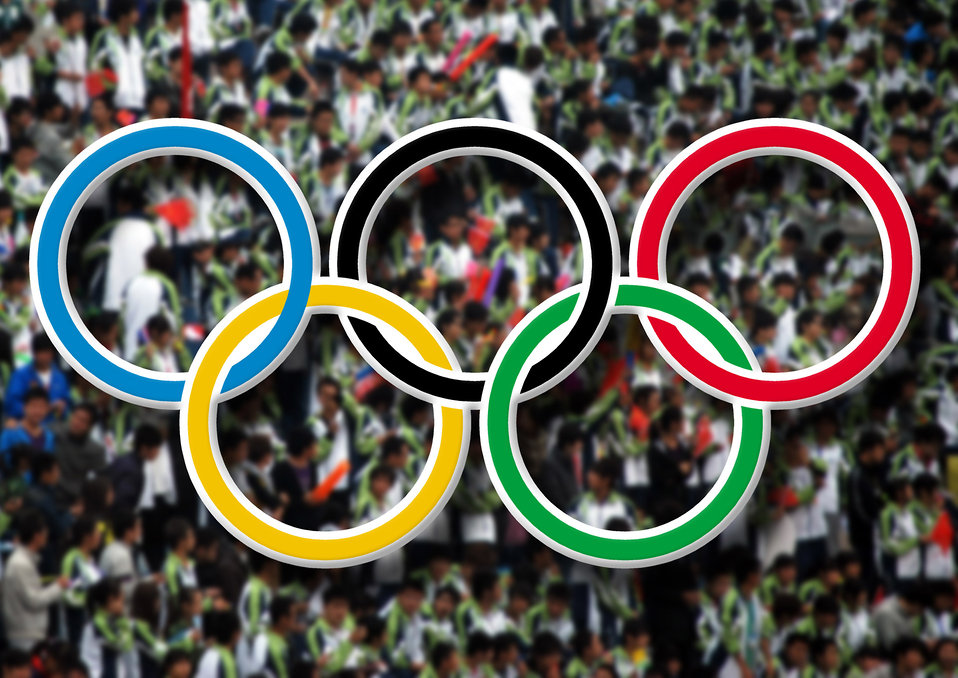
Olympic rings and crowd

Olympic rings with crowd of people in the background.